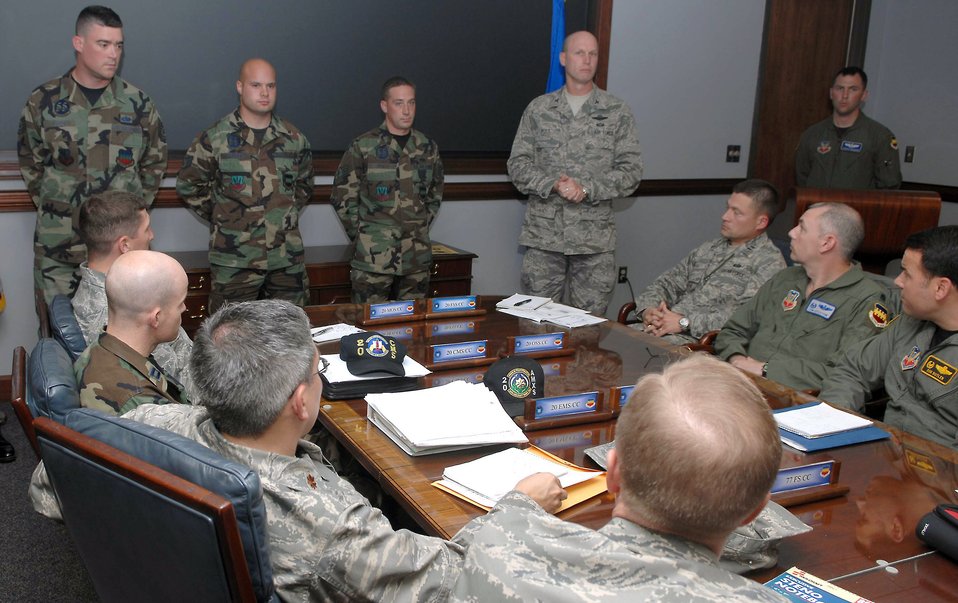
Get out! Get out now!

Col. James Post presents the Lt. Erwin Shaw Ace Award to crew chiefs (left to right) Tech. Sgt. Fredric Wilson, Staff Sgts. Lee Walden and Brad Miner,during a wing staff meeting Nov. 28. The sergeants earned the award for their quick and accurate emergency response to an aircraft fire. Colonel Post is the 20th Fighter Wing commander and the sergeants are with the 55th Aircraft Maintenance Unit.